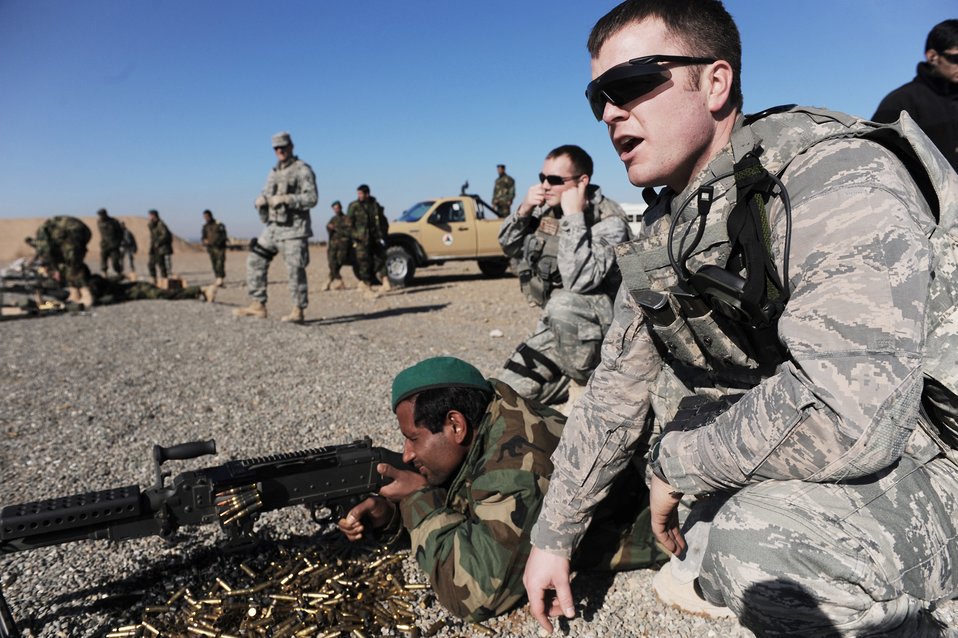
Aim for the center

Tech. Sgt. Joshua Ray, a 738th Air Expeditionary Advisory Group security forces adviser, gives an Afghanistan National Army Air Corps soldier feedback during weapons training in Kandahar, Afghanistan, Jan. 4, 2010. Sergeant Conley is deployed from Fairchild Air Force Base, Wash., in support of Operation Enduring Freedom.